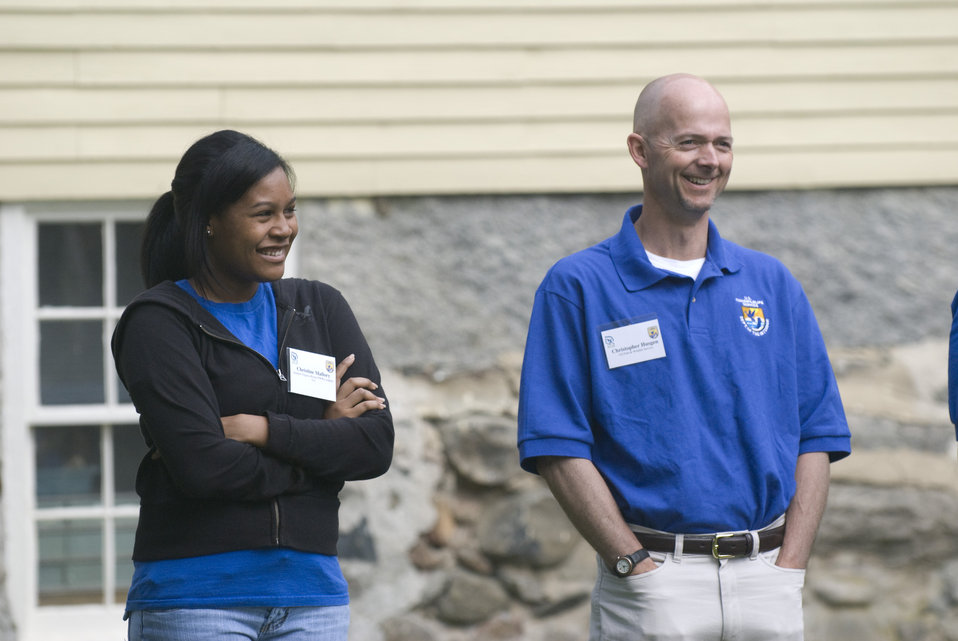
CIP Student and Service employee.